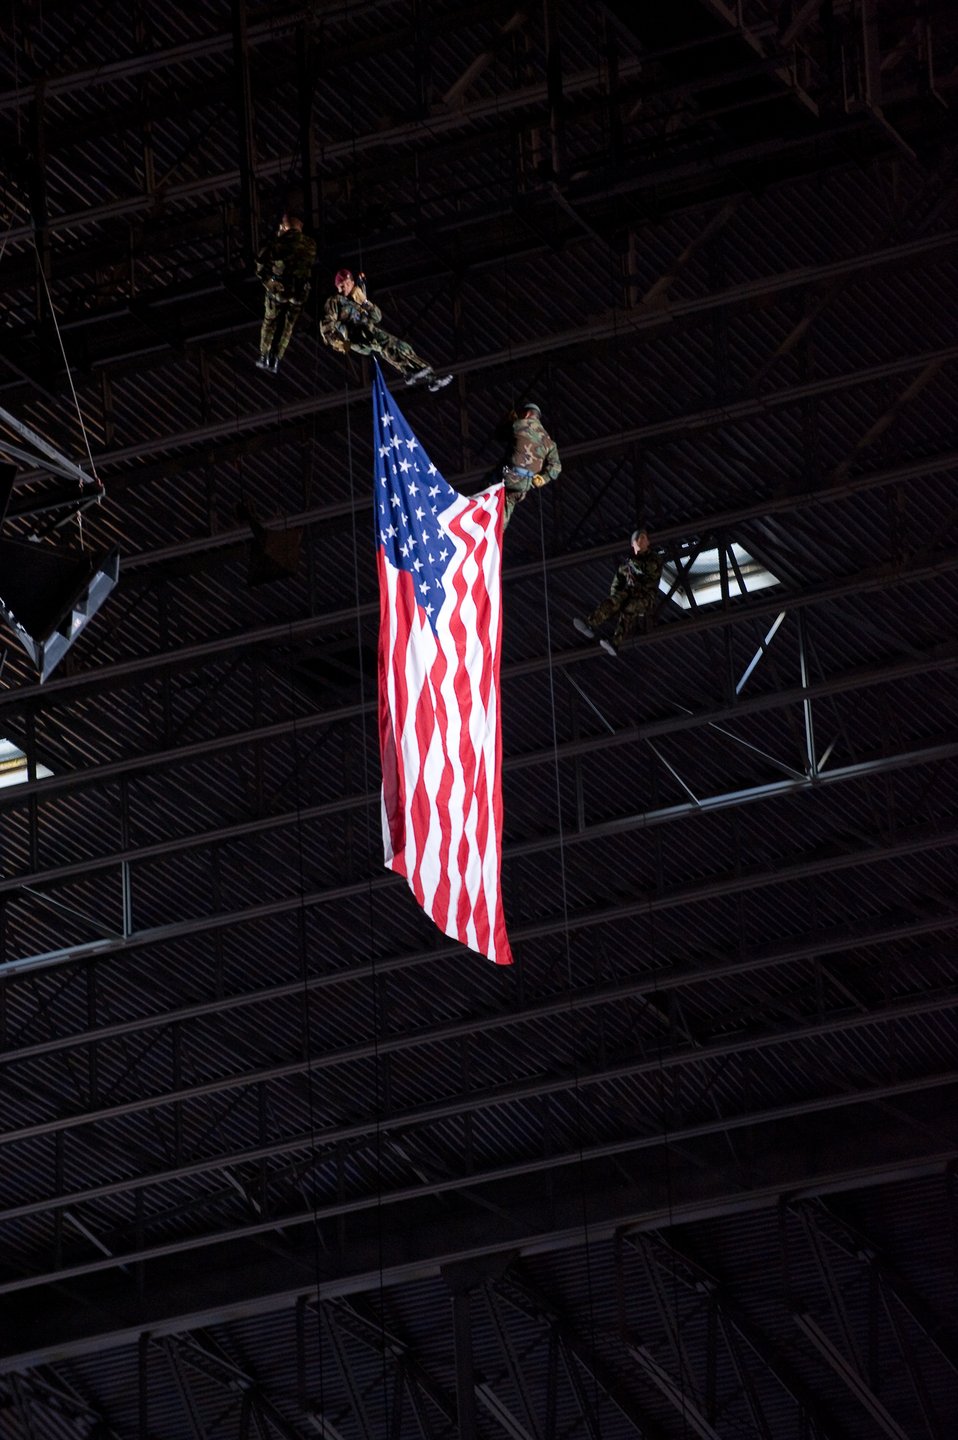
AF flies high at Monster Jam

Pararescuemen from nearby Lackland Air Force Base, Texas, repel from the rafters of the Alamodome carrying the U.S. flag as the national anthem is sung, during the opening of the 2009 Monster Jam event in San Antonio Jan 11.